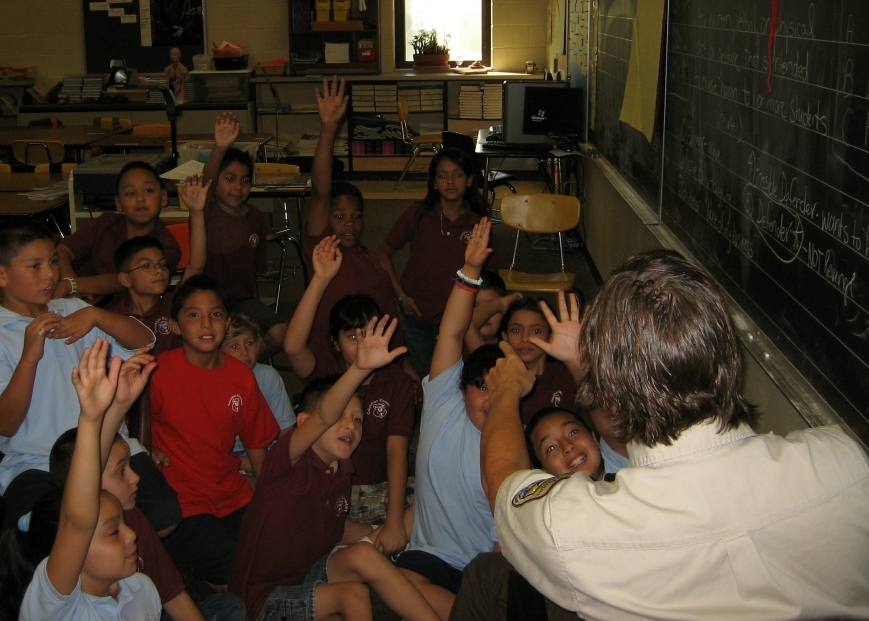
EE Outreach